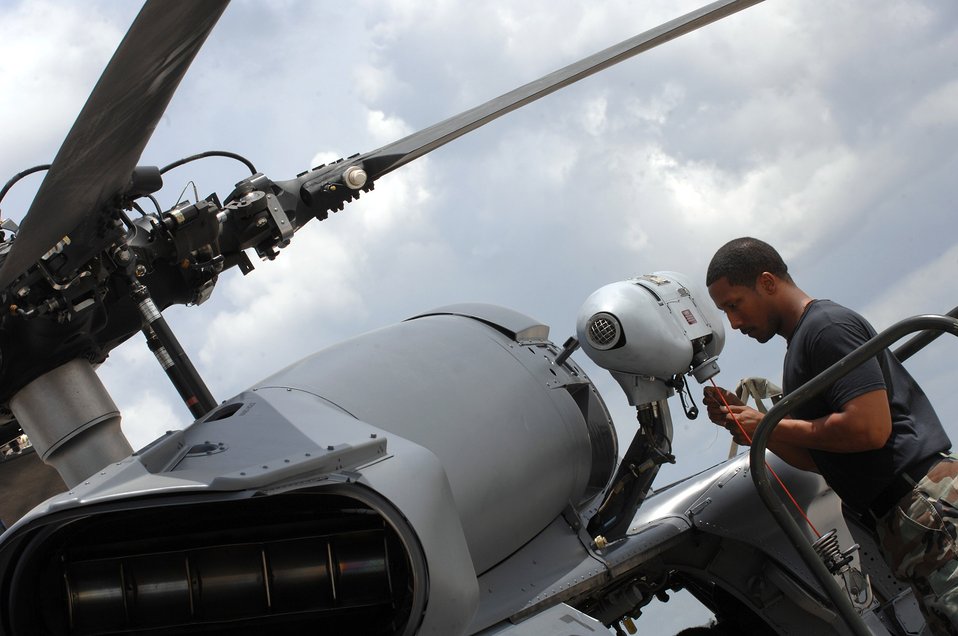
HH-60G Pave Hawk

Staff Sgt. Ray Campbell installs a hoist cable squib April 1 on an HH-60G Pave Hawk helicopter at Moody Air Force Base, Ga. A hoist cable squib is an explosive device that cuts through the cable in an emergency. Sergeant Campbell is an electrical and environmental technician with the 723rd Aircraft Maintenance Squadron.